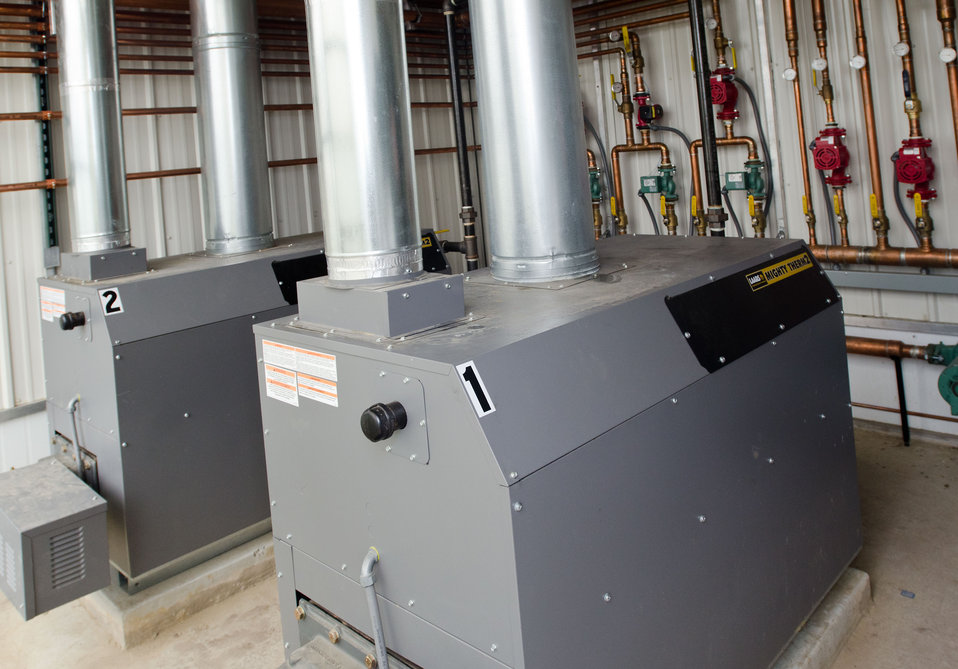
One million BTU propane fueled boilers at Good Harvest Farm on April 19, 2011 in Strasburg, PA, completed Rural Energy for America Program (REAP) grant supported renovation six months ago that replaced an 80-year old structure with a new 4,000 sq. ft. facility that features energy efficient glass roof with curtains that block or trap heat, radiant heaters in or above the floor, and the replacement of an oil-fired hot-air furnaces with propane fueled boilers that supply fin-tube and cement embedded tube elements with hot water. With current fuel prices, there is a projected 2011 energy cost savings of more than $20,000; a 40% reduction in energy costs – exceeding projected savings. Plant health and quality has improved and been more consistent because the temperature and humidity is computer controlled and distributed evenly throughout the facility. Utilizing sensors and a roof mounted weather station the system can maintain four different climate zones 24-hours a day. Two 1,000,000 BTU propane fueled boilers heat the water to 190 degrees for the 8,000 feet of fin-tube heating elements were used where the original foundation, and the 8,000 feet of tubing that was embedded in a new cement foundation. After traveling through the energy efficient system, water only looses 20 degrees. When temperatures become to hot, motorized roof vents open to allow rising heat to escape; a 98% energy savings from massive fans that previously forced air out. Both systems create a microclimate in and round the plant trays in the growing and sales room. Representing Good Harvest Farm Chris Powell says, “You don’t need to have a lot of land to have a lot of green houses. There are places in cities where vegetables are grow on store roof tops and selling them below in the same structure.”